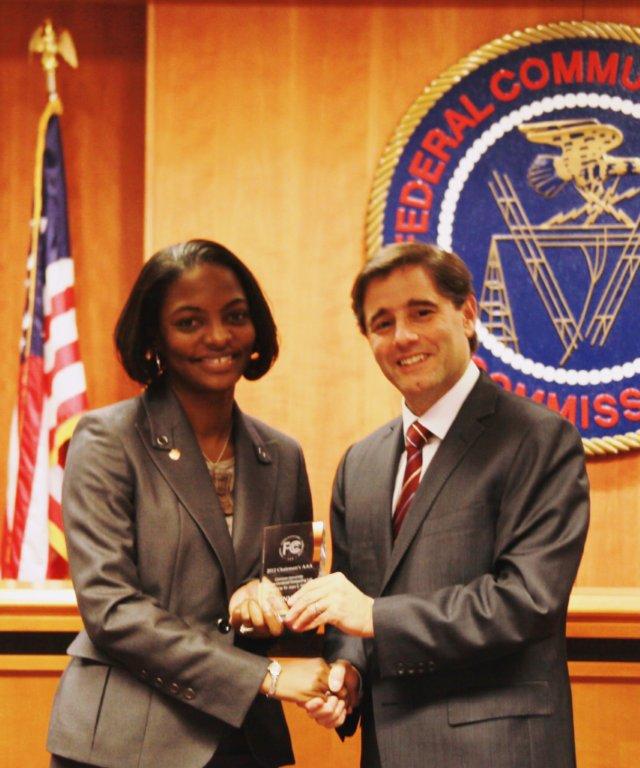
Andrea Johnson, Clemson University, Accepts Civic Participations Solutions Award

Andrea Johnson, accepts Civic Participations Solutions Award from Chairman Genachowski for Clemson University.